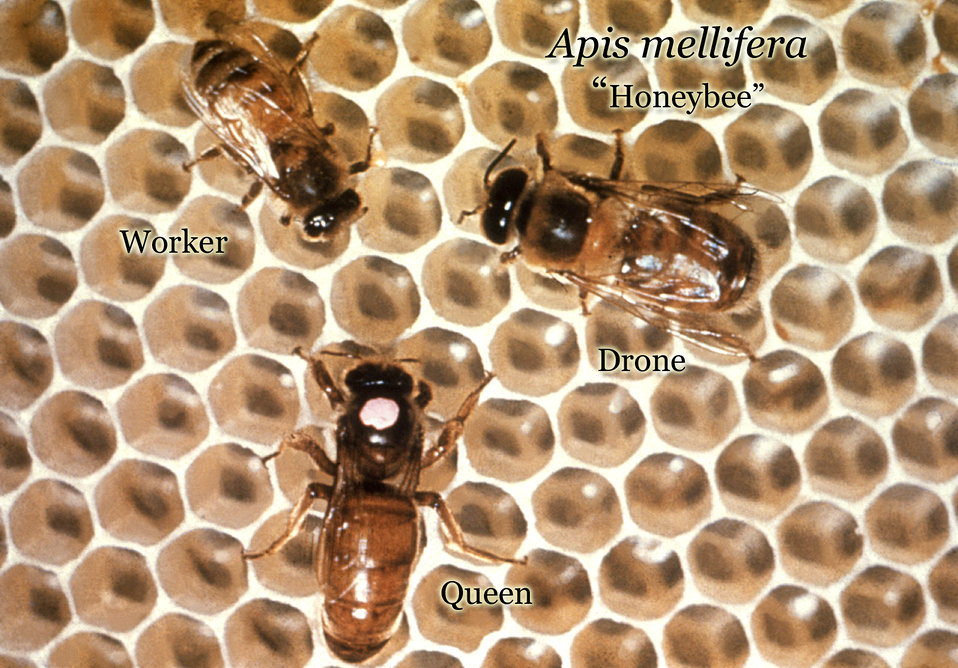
This image shows 3 honeybees, Apis mellifera; the queen is at lower left, a worker upper left and a drone is upper right.